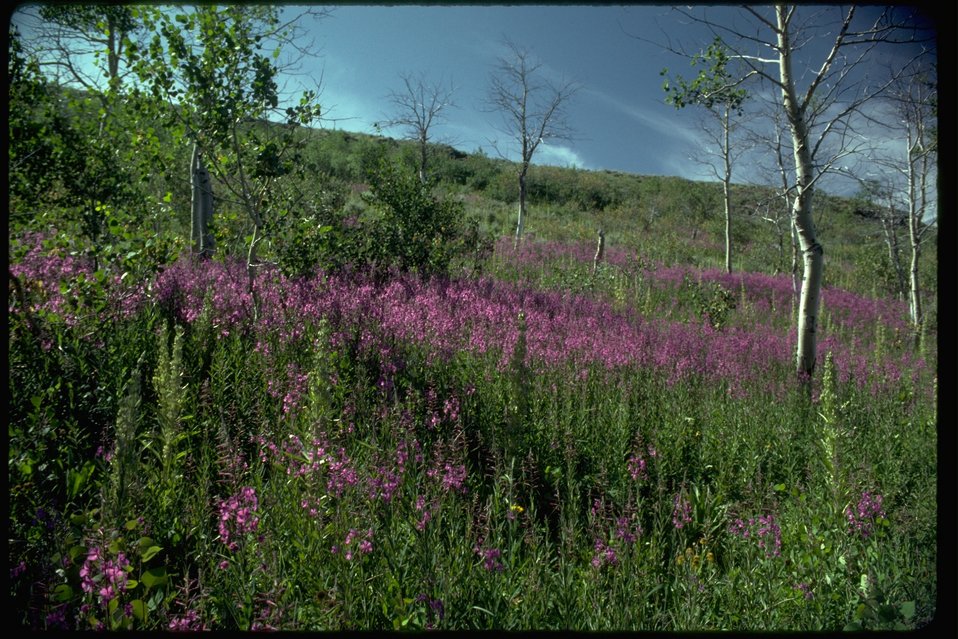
Fireweed and Quaking Aspen on Steens Mountain near Fish Lake in Southeastern Oregon.